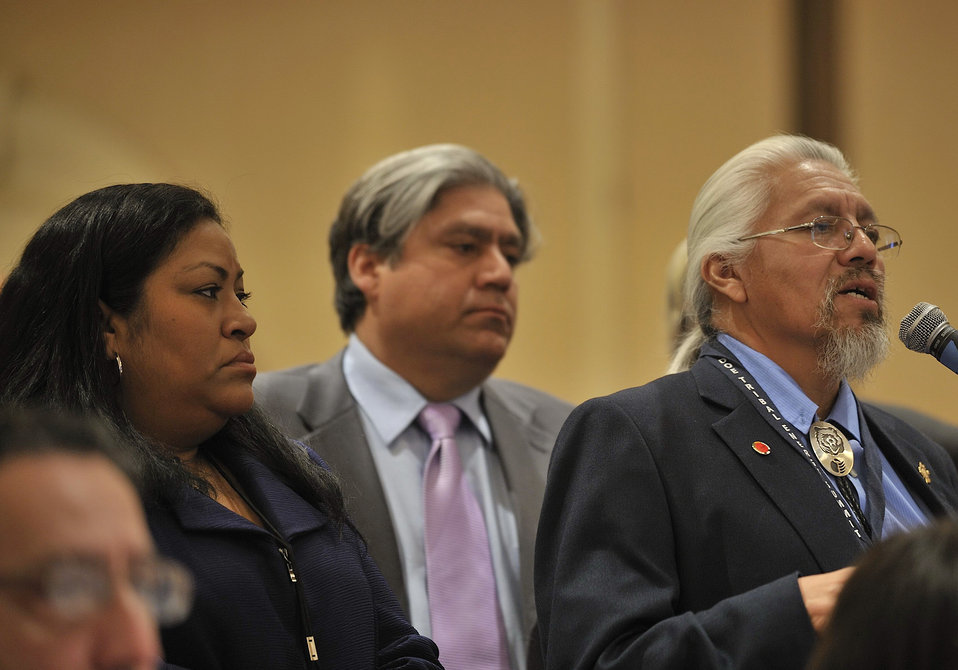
Tribal Energy Summit

Chairwoman LaChappa waits to ask question during Q&A period; All Indian Pueblo Council Chairman Joe Garcia speaks at the microphone; Roger Fragua also waits to ask question.